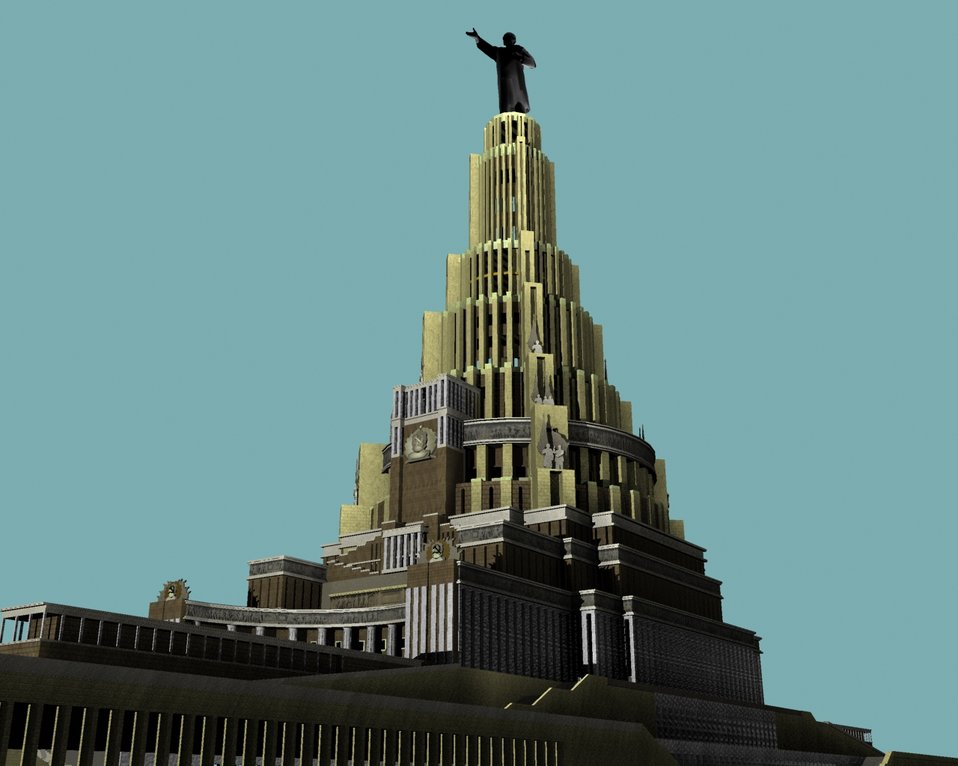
Русский: Дворец советов (Дворец Верховного совета СССР). Выполнен в 3D Max по проекту 30-х годов Palace Of Soviets the Soviet Union, (done in 3D Max)